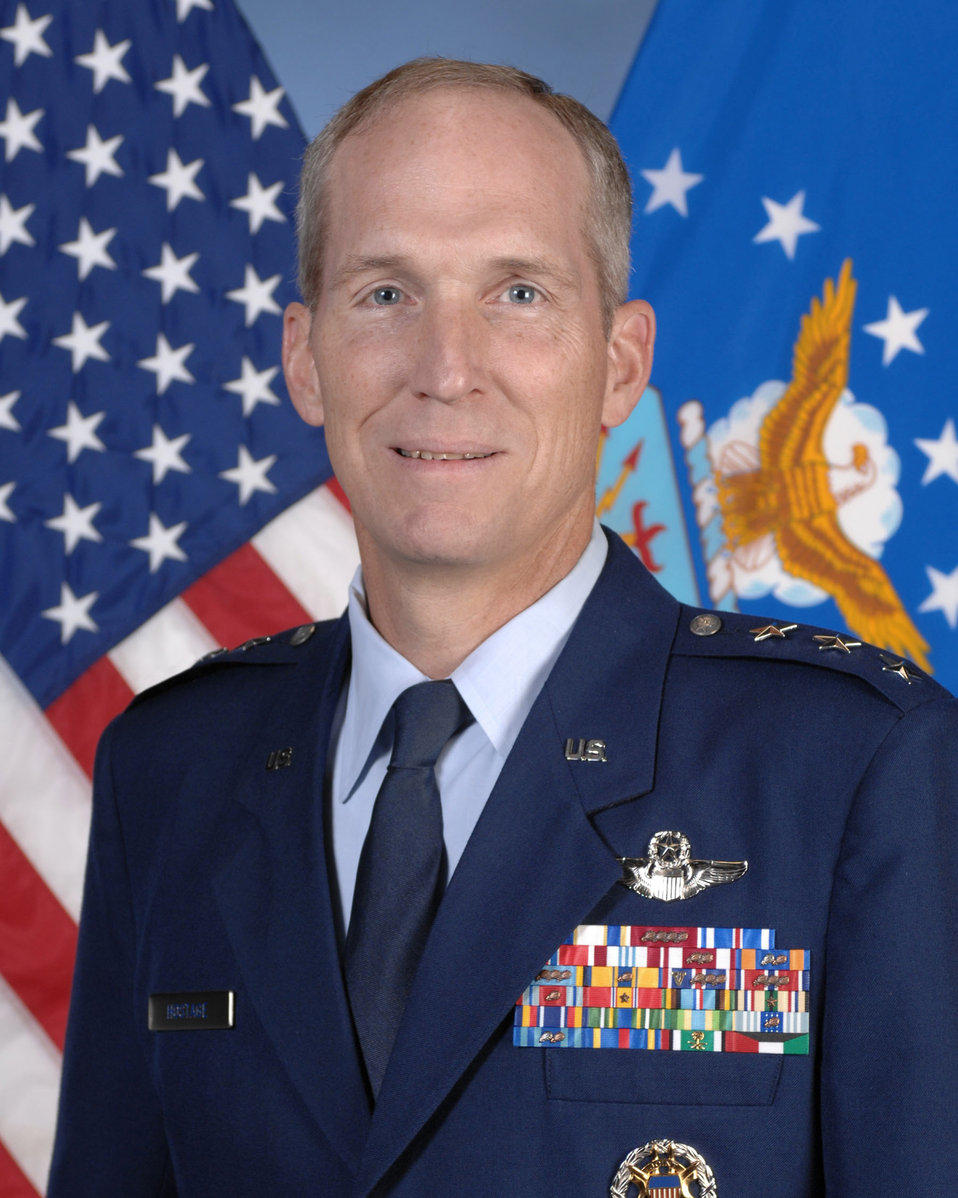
General Hostage to lead Air Combat Command

The U.S. Senate confirmed Lt. Gen Gilmary M. Hostage III for appointment to the grade of general with assignment as the commander of Air Combat Command